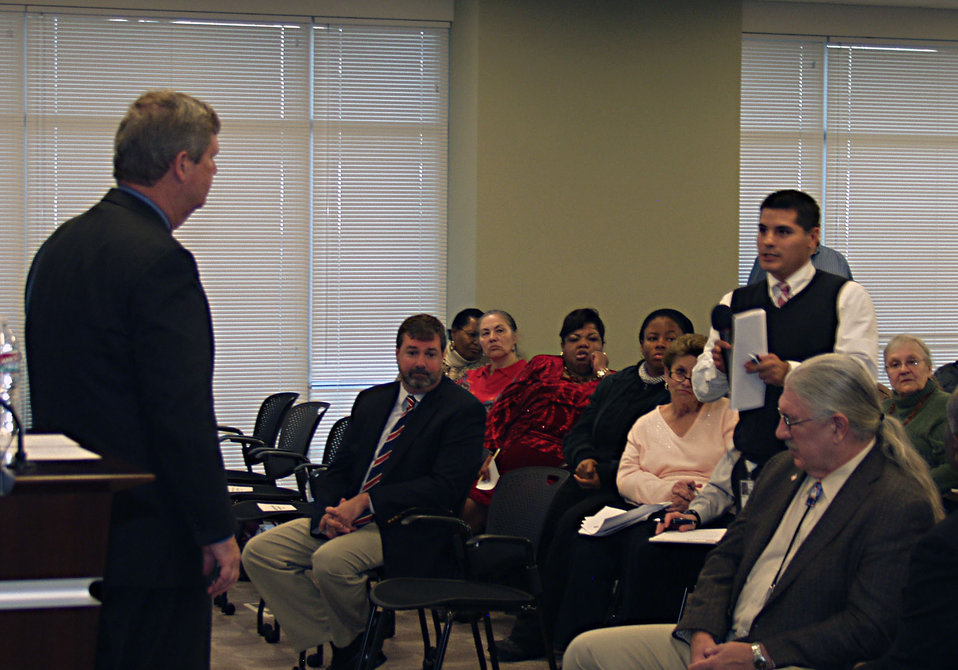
David Lopez of the U.S. Forest Service asks Agriculture Secretary Tom Vilsack a question during the Secretaries visit to Albuquerque, NM, on Thursday, December 8, 2011. USDA Photo..